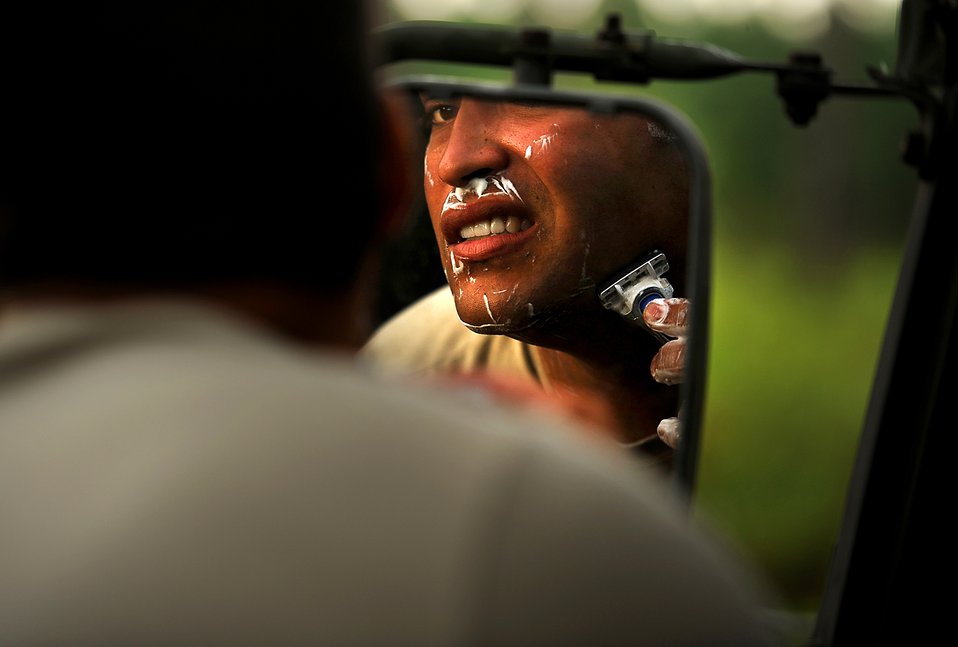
Smooth Operator

Master Sgt. Edgar Rodriguez shaves Aug. 16, 2011, at Townsend Range in Brunswick, Ga., before a land navigation patrol with his students during a three-day field exercise. Rodriguez is a joint terminal attack controller instructor assigned to the 146th Air Support Operations Squadron in Oklahoma City.